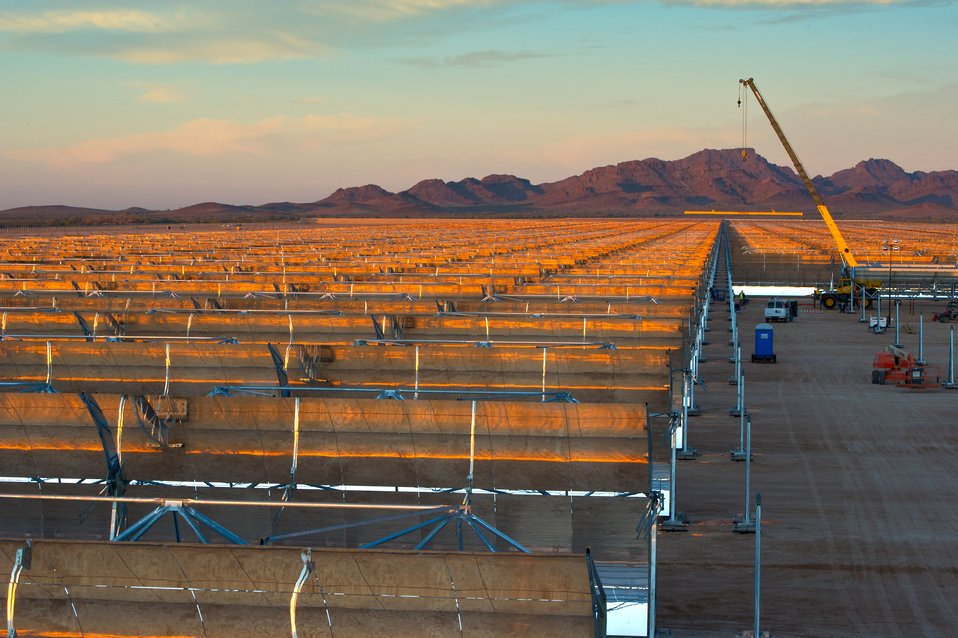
WORKERS INSTALLING MIRRORED PARABOLIC TROUGH COLLECTORS.

Workers construct one of a dozen thermos like molten salt tanks at Abengoa's Solana Plant. Thermal storage will provide up to 6 hours of dispatchable energy to be used after sunset of if cloudy. The molten salt will generate electricity with conventional steam turbines. Solana is a 280 megawatt utility scale solar power plant (CSP) under construction in Gila Bend, Arizona, USA. When finished it will generate 280MW's providing over 70,000 Arizona homes with clean, sustainable power.